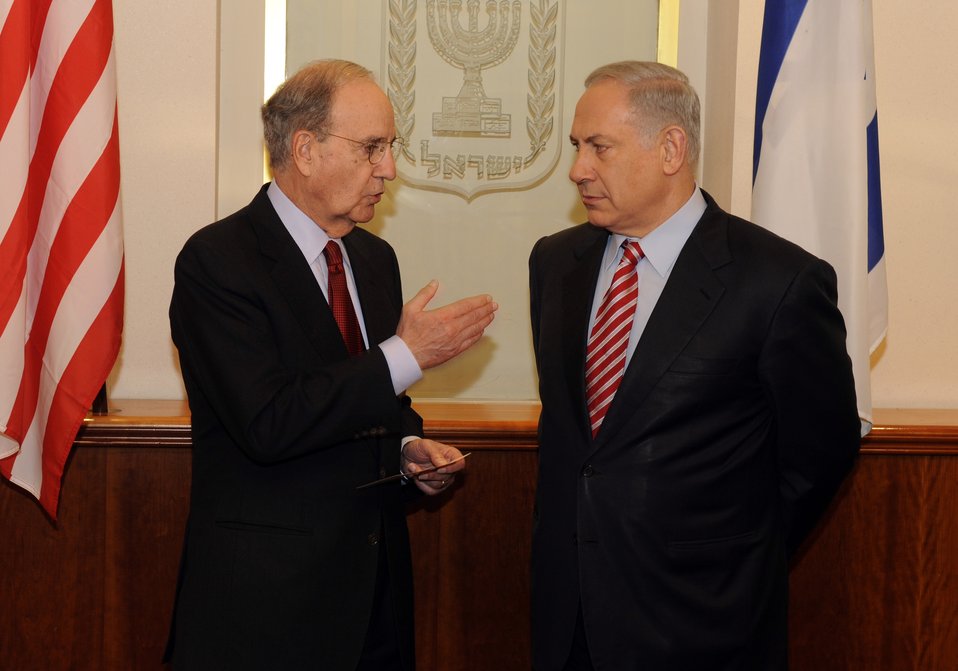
Special Envoy Mitchell With Israeli Prime Minister Benjamin Netanyahu

Special Envoy Mitchell speaks with Israeli Prime Minister Benjamin Netanyahu in Jerusalem, March 21, 2010.